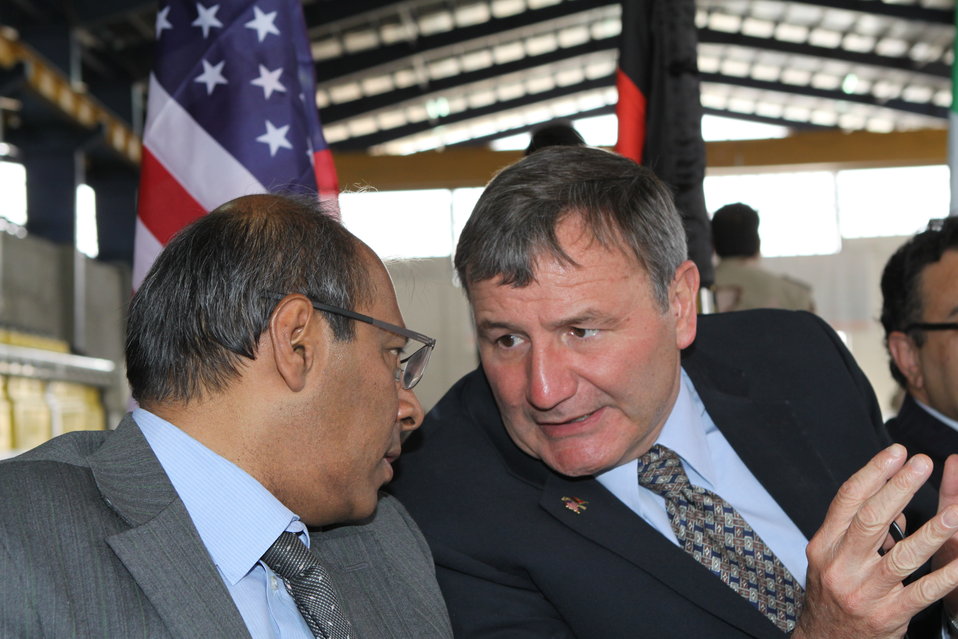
100525 Hirat Marble Conference 306